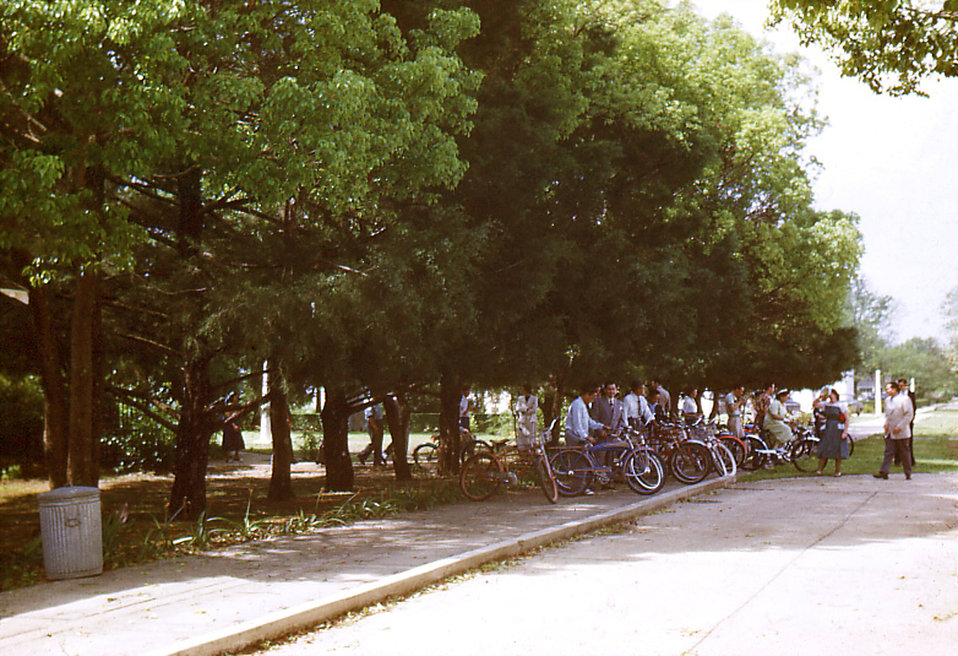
This historic image depicted a group of Carville, Louisiana Leprosarium patients gathered for one of their invigorating Sunday bicycle outings, whereupon, they would travel to the woodlands for a picnic, or to just enjoy the ride itself. Being that the patients were for the most part quarantined, and therefore, sequestered from the surrounding society, participation in outdoor activities such as this bicycle outing, were well attended, and enjoyed by all.